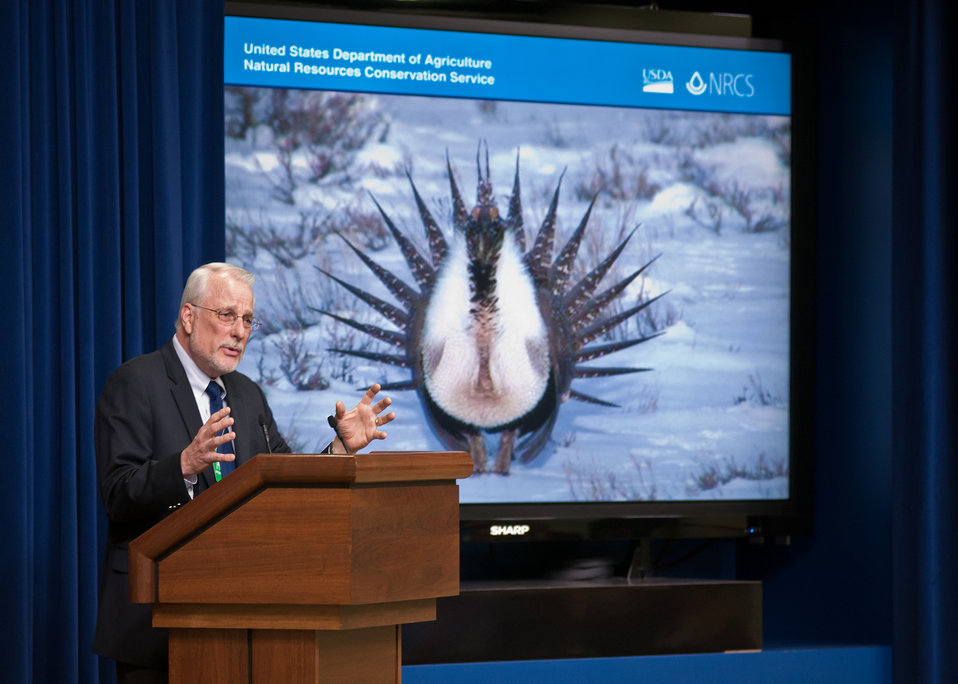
Dave White, Chief, Natural Resources Conservation Service discussed the success of conservation efforts of the United States Department of Agriculture Natural Resources Conservation Service at the 11th Annual Meeting of State Agriculture and Rural Leaders at the Eisenhower Executive Office Building in Washington, D.C., on Friday, January 6, 2012. The Sage Grouse pictured to the right being a one of the great success stories of USDA, NRCS. On Friday, January 6, 2012.